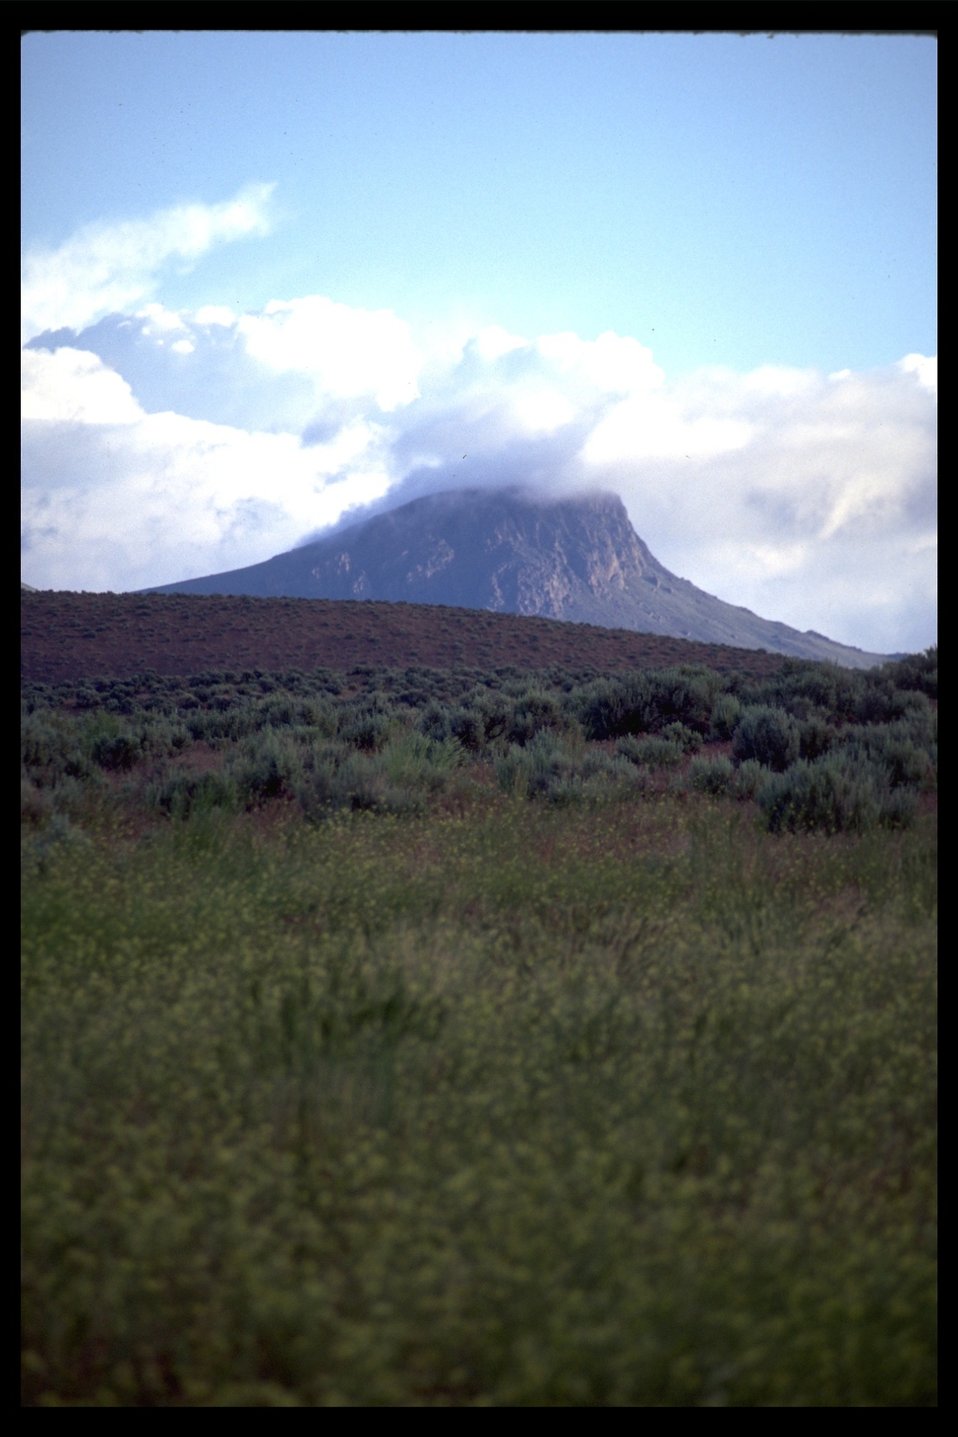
Alvord Peak with a cloud cap. (WSA 2-83)